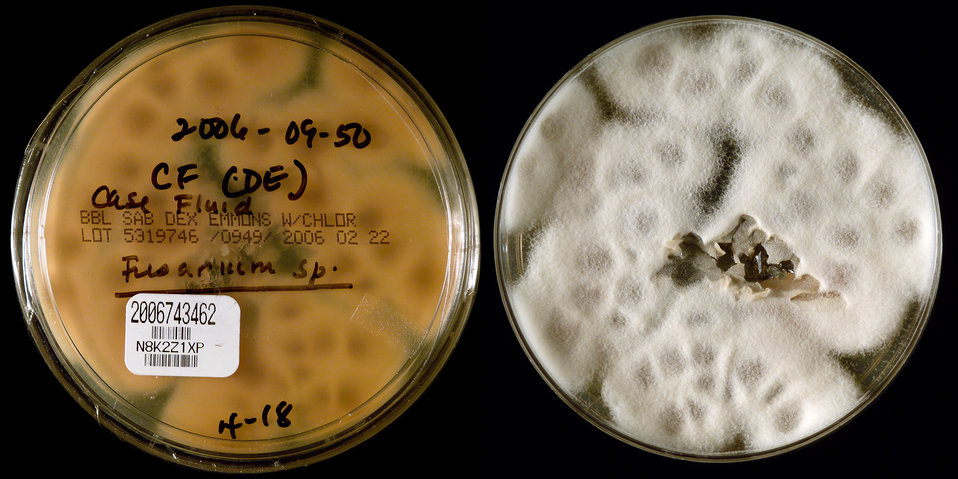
This image depicted two sides of a Petri dish, which had been inoculated with a specimen derived from the contact lens case fluid of a Tennessee Fusarium keratitis-patient, and had subsequently grown a filamentous colony of Fusarium solani Species Complex (FSSC Group# 1) fungal organisms. The type of agar medium in the case of this specimen was Sabouraud Dextrose (SAB). While it is not unusual for Fusarium to cause keratitis, it was the number of affected individuals, which had increased dramatically, predominantly in persons wearing contact lenses, that had warranted this epidemiologic study. The laboratory received cultures which came from two sources: Fusarium spp. isolated from the eyes of patients with fungal keratitis, and cultures from contact lenses, cases and/or lens solution.